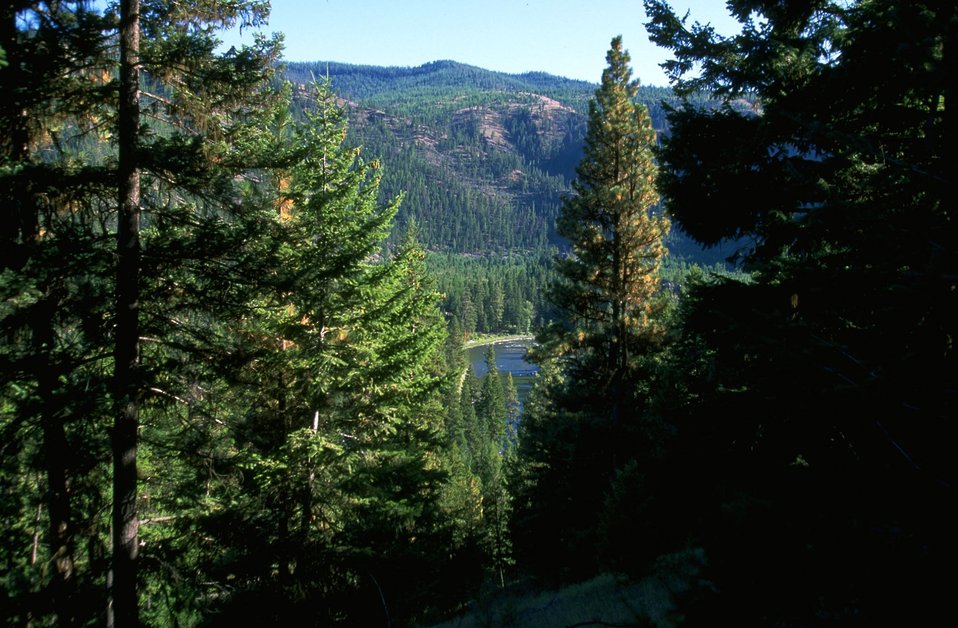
Forest view along the Blackfoot River